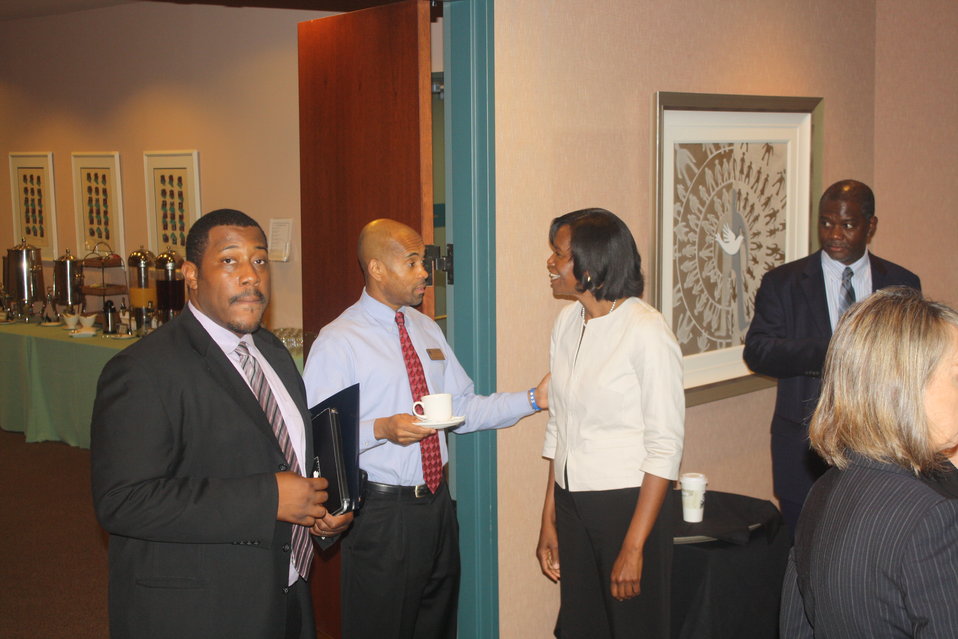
Faith-Based and Neighborhood Partnership launch at Atlanta's Carter Center